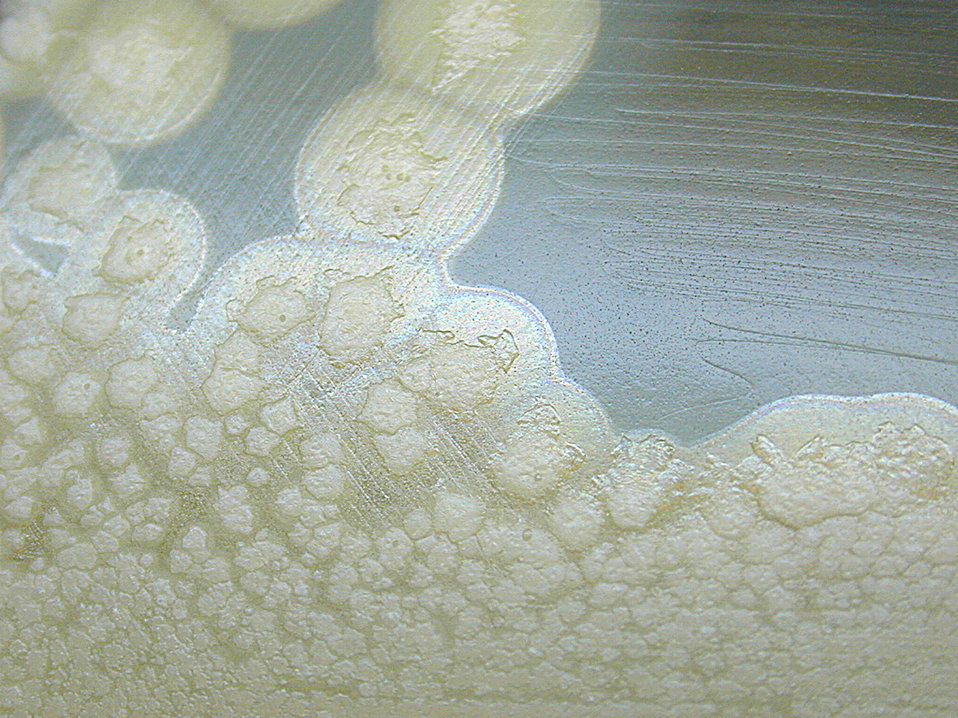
Clostridium botulinum growing on egg yolk agar showing the lipase reaction after 72 hours of incubation.